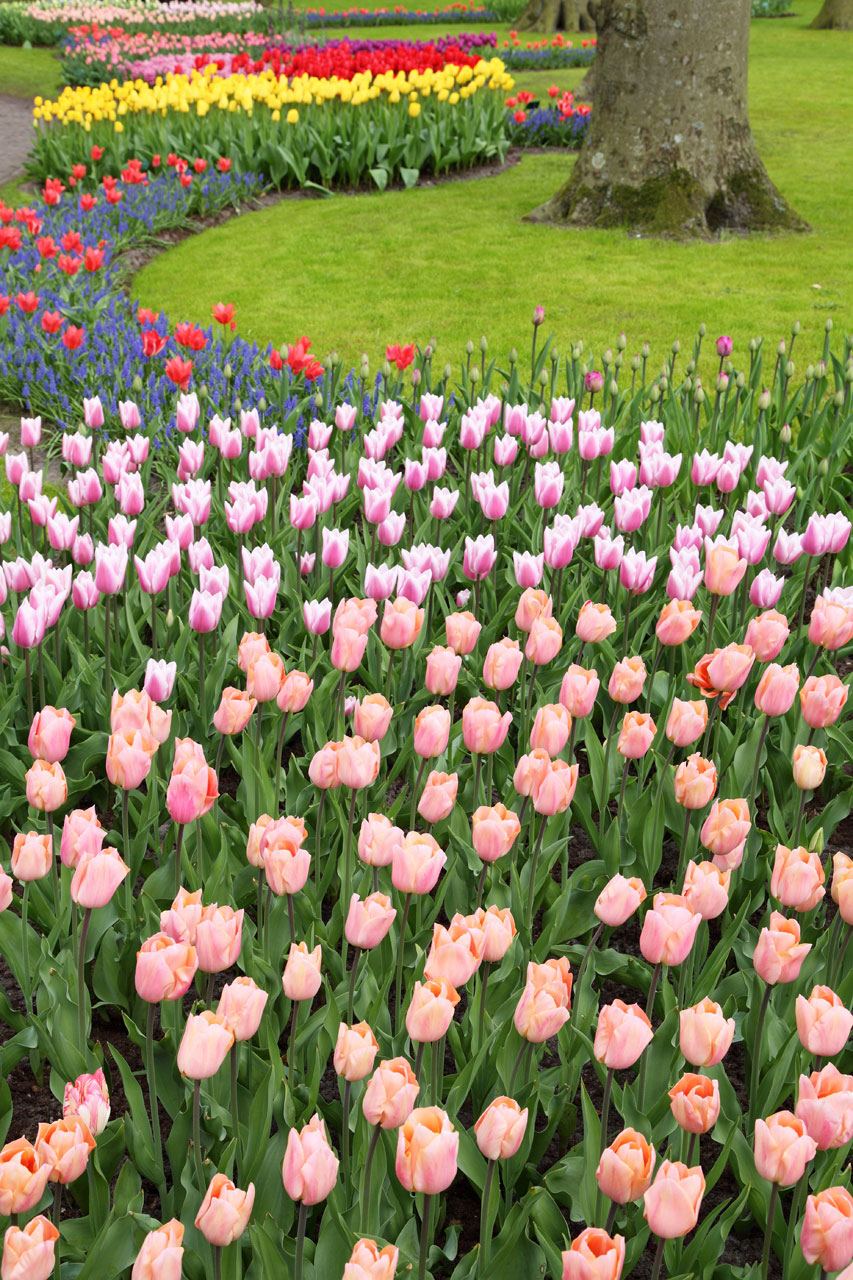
Flowers of keukenhof

Colorful tulips and grape hyacinths in keukenhof.